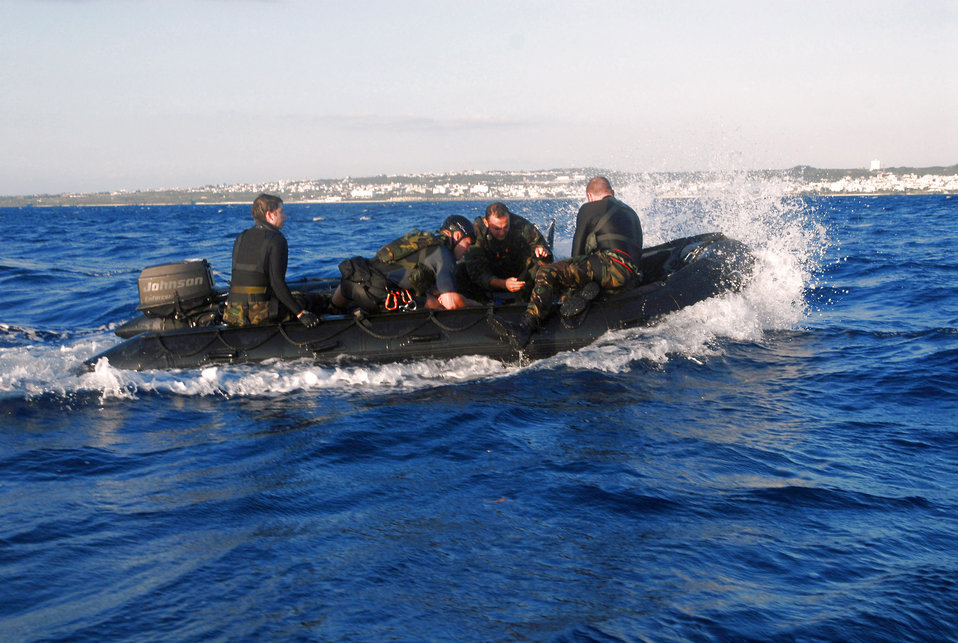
Kadena Airmen aid injured mariners

Pararescuemen of the 31st Rescue Squadron return to shore after performing water rescue training using an inflatable zodiac boat in 2007 off of Kadena Air Base, Japan.